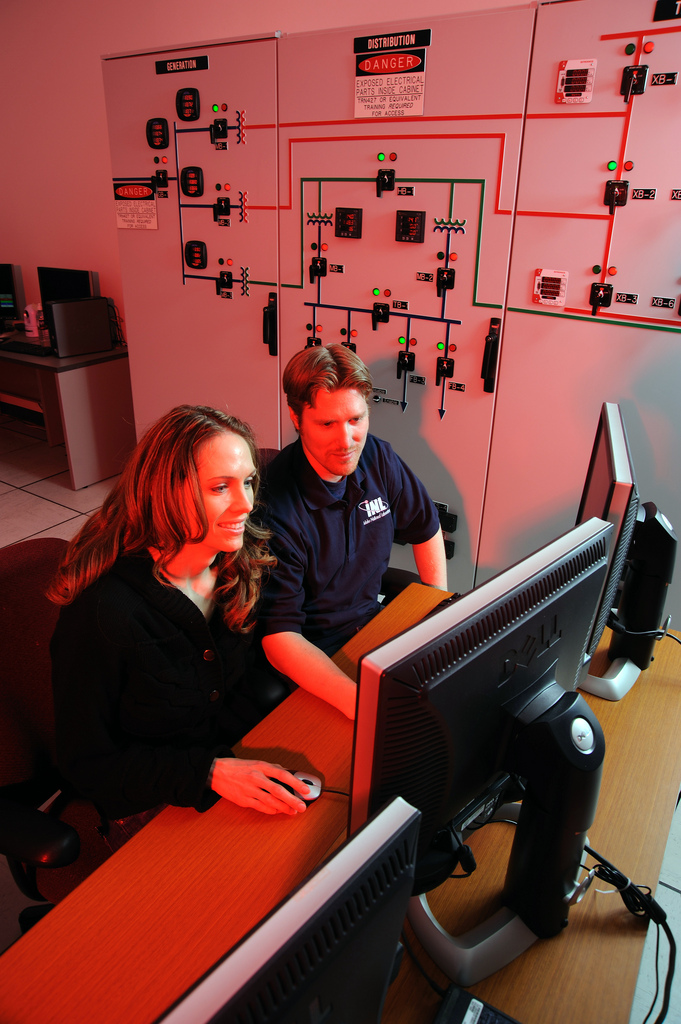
Idaho National Laboratory cybersecurity specialists conduct research on a commercial supervisory control and data acquisition system.